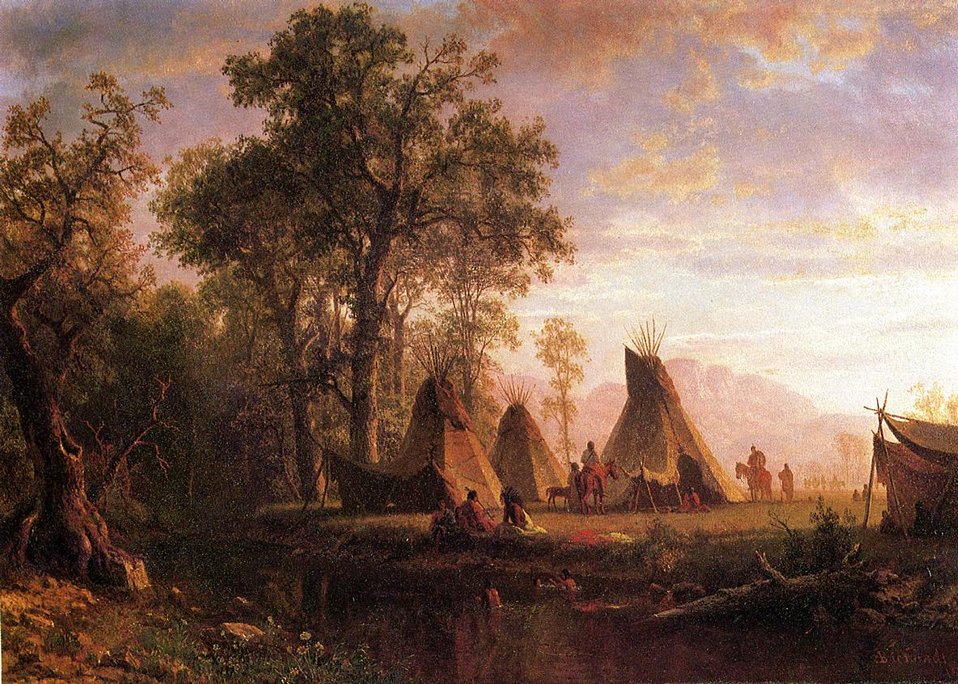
Bierstadt Albert Indian Encampment Late Afternoon